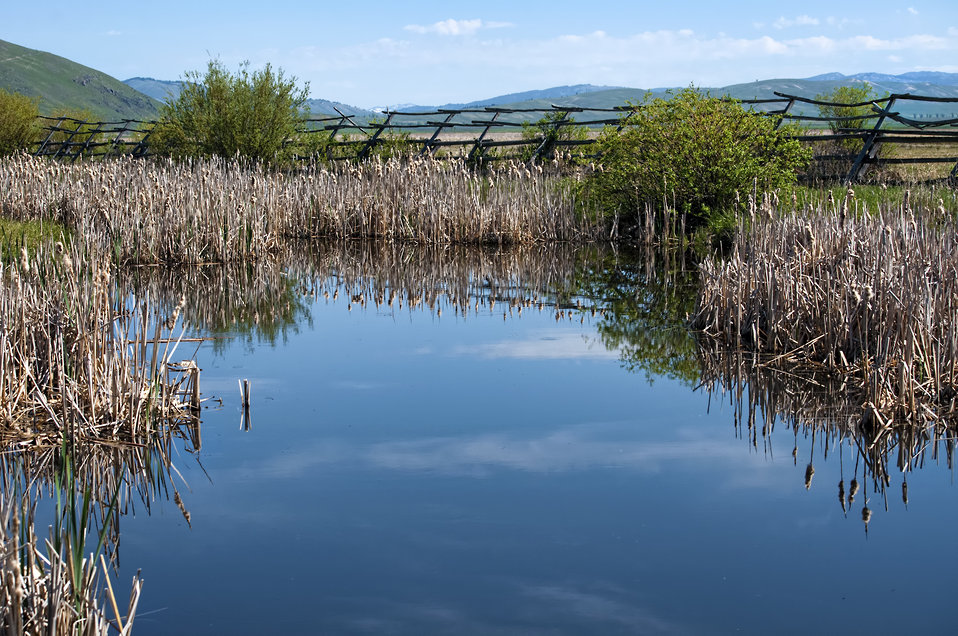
Reflections

Clouds are reflected in the still blue water in the wetlands area near the National Elk Refuge visitor center.

Credit: USFWS / BJ Baker, National Elk Refuge volunteer